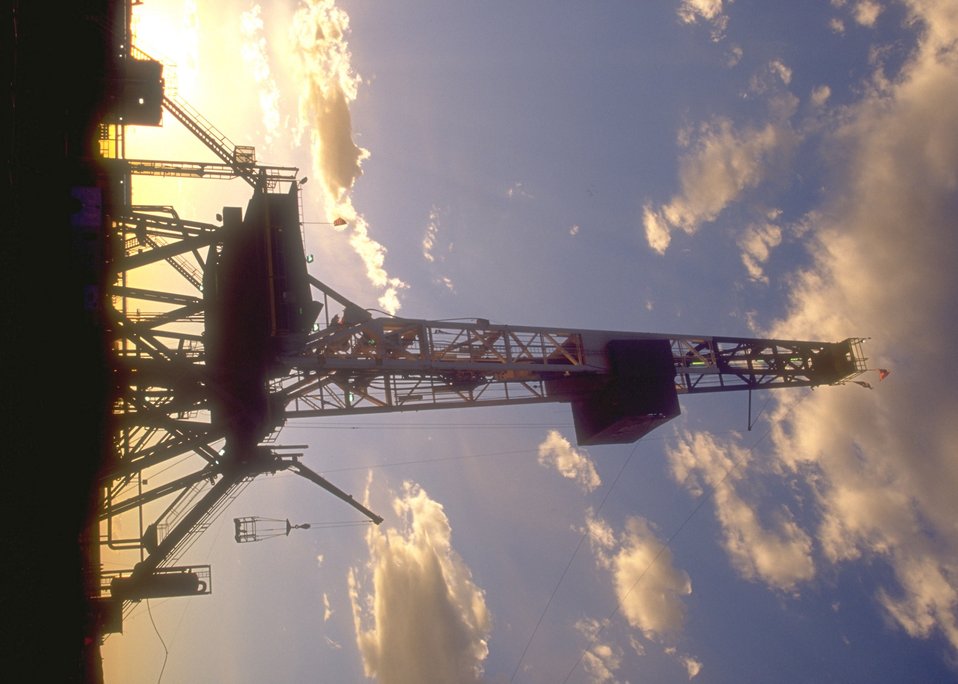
Burlington Northern deep well rig, Casper Field Office.